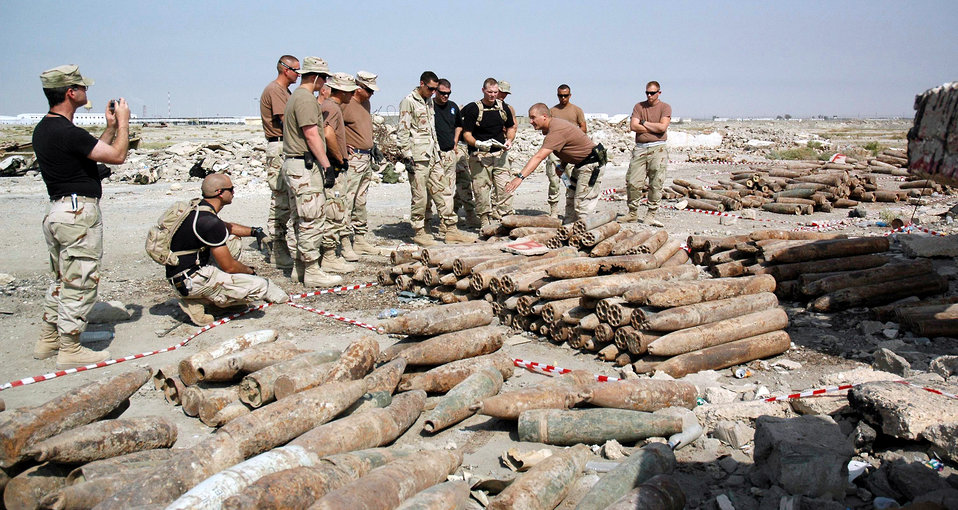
Big bang

IRAQ (AFPN) -- Staff Sgt. Ron White gives direction to the volunteers who will help palletize ordnance for transportation to the explosive ordnance disposal site at Ali Base, Iraq. Sergeant White is assigned to the 407th Expeditionary Civil Engineer Squadron.